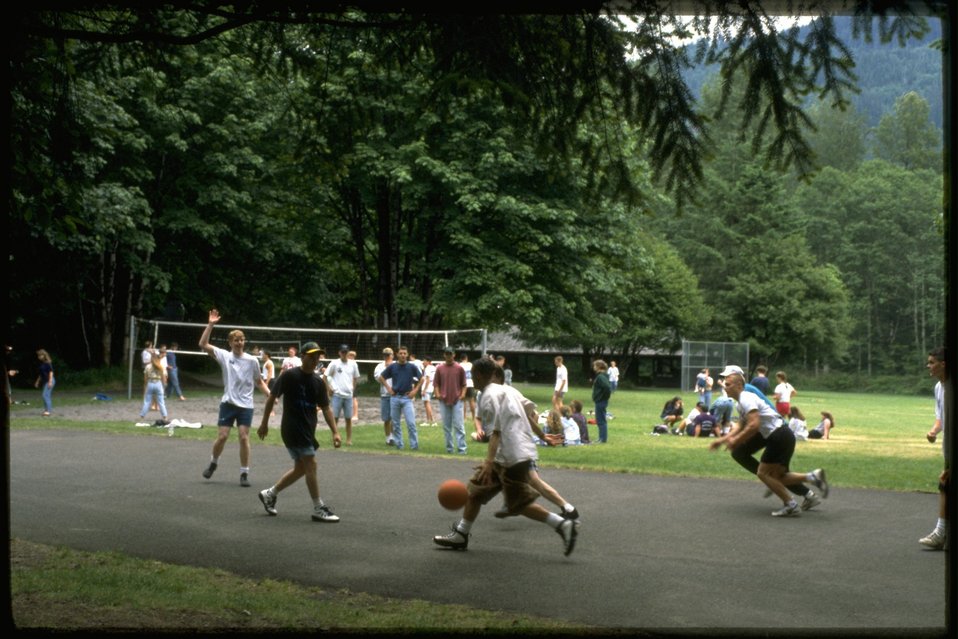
The basketball and volleyball facilities at the Wildwood Recreation Site.